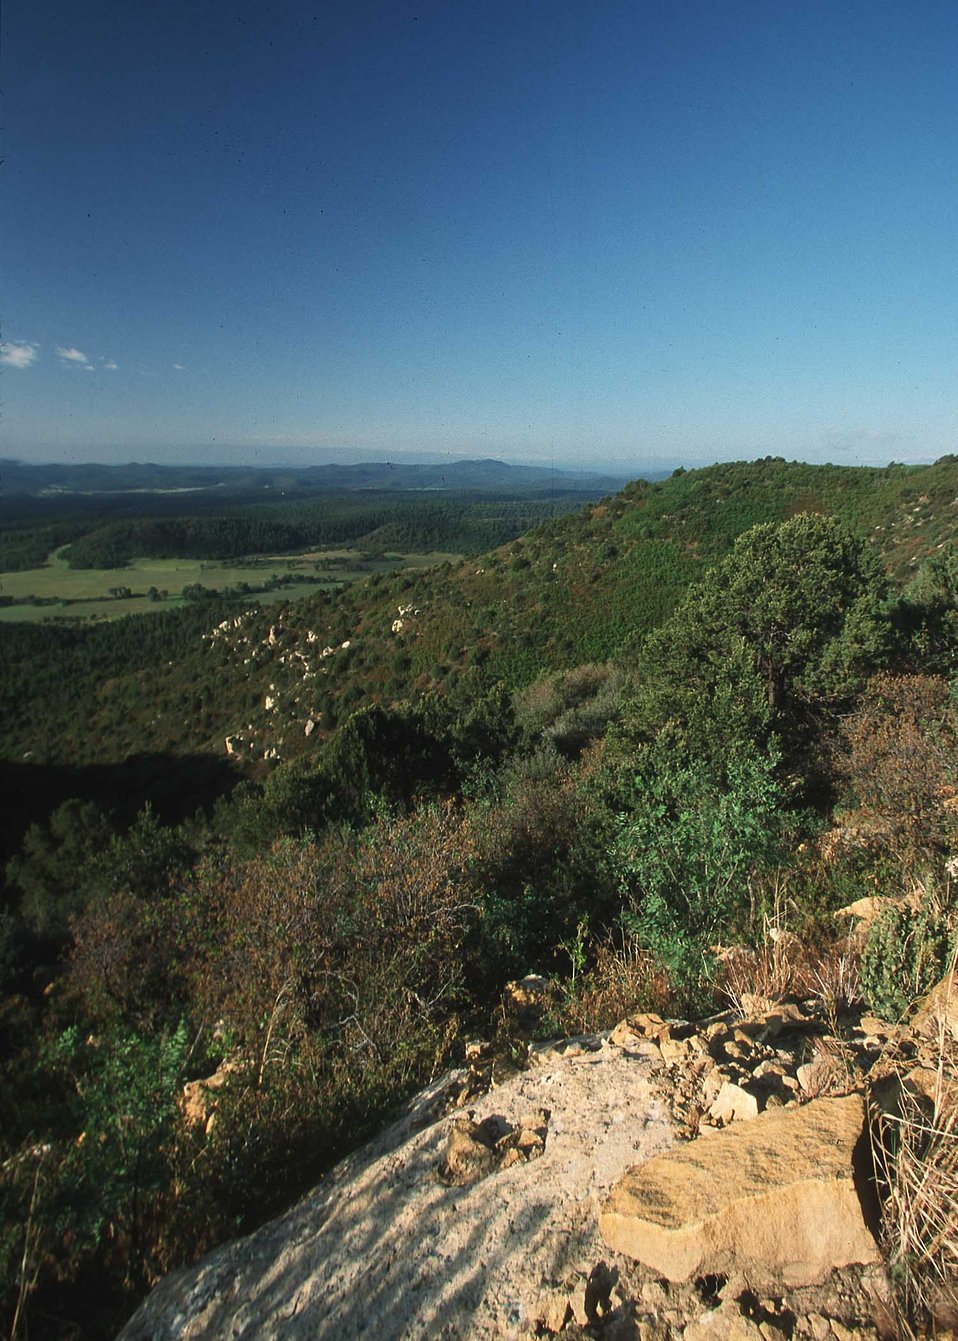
Vista near Spanish Peaks, CO.